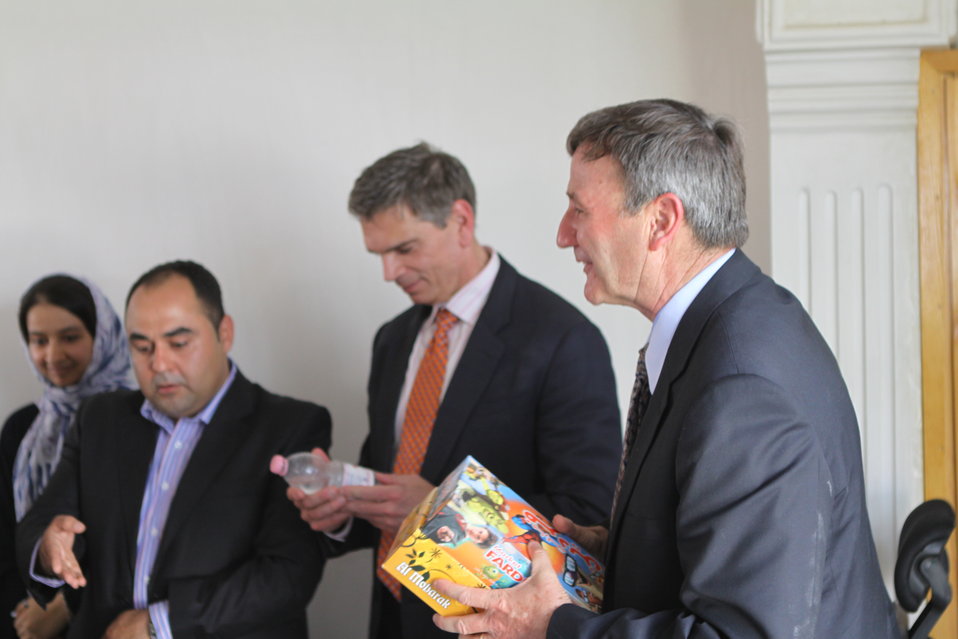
100525 Hirat Marble Conference 859